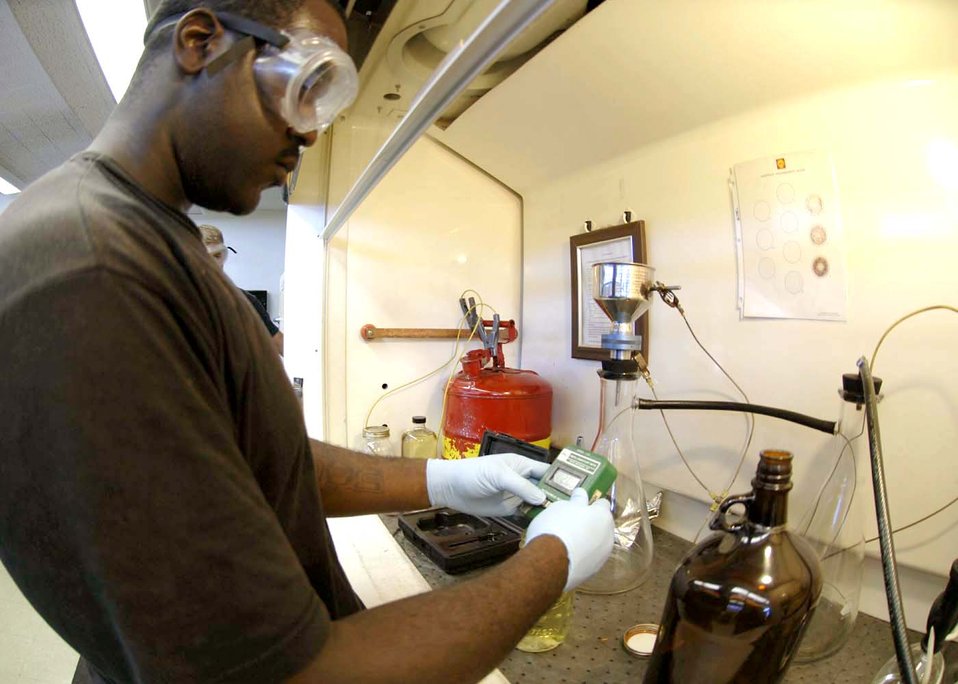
Quality fuel

DAVIS-MONTHAN AIR FORCE BASE, Ariz. -- Airman 1st Class Lamontre Spivey tests for conductivity additives here. He is a fuels analysis laboratory technician with the 355th Logistics Readiness Squadron.